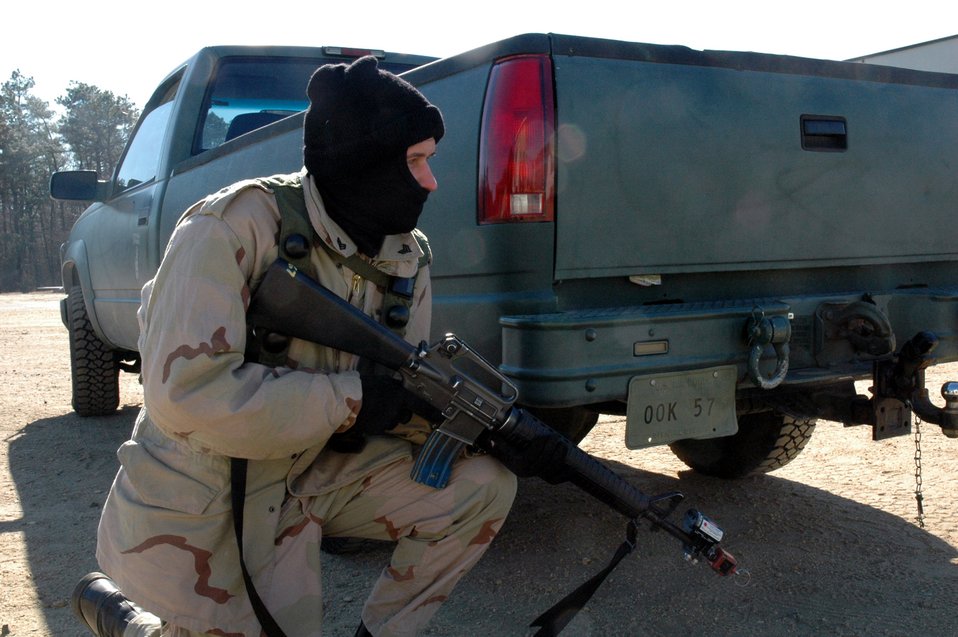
Eagle Flag

An Airmen playing the role of a